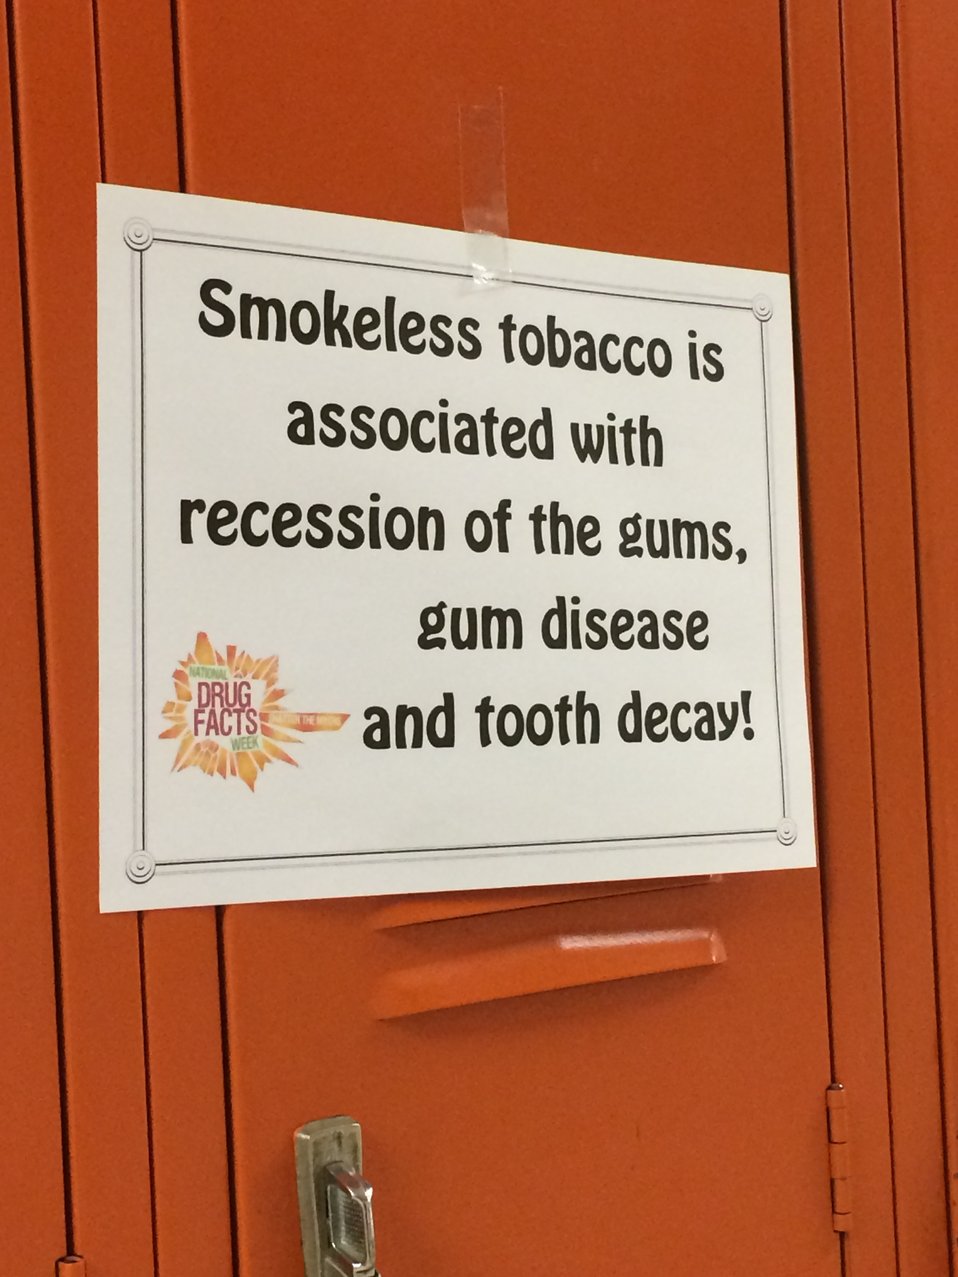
NDFW Factoid

Teenagers from the Van Buren County SAFE Coalition's, Youth Leadership Council (YLC) in Keosauqua, Iowa participate in various events during National Drug Facts Week, 2014.